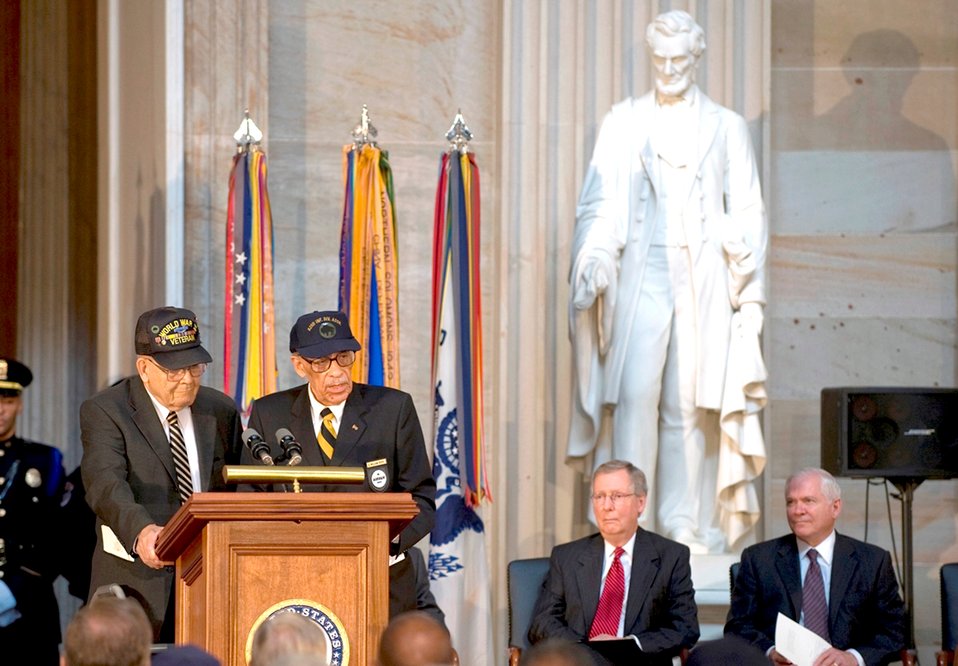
Air Force observes integration's 60th anniversary

World War II veterans Spencer Moore, left, and William Perry address the audience at a ceremony to mark the 60th anniversary of the integration of the armed services in the Capitol Rotunda, Washington, D.C., July 23.